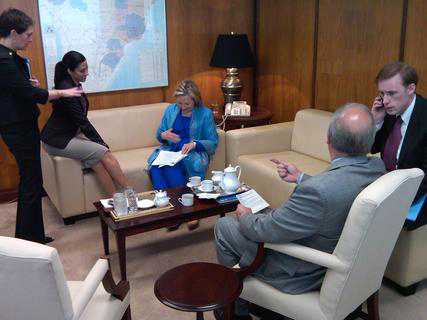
Behind the Scenes: Secretary Clinton in Brazil

U.S. Secretary of State Hillary Rodham Clinton reviews her schedule for next few days with her staff in Sao Paulo, Brazil, March 10, 2010.